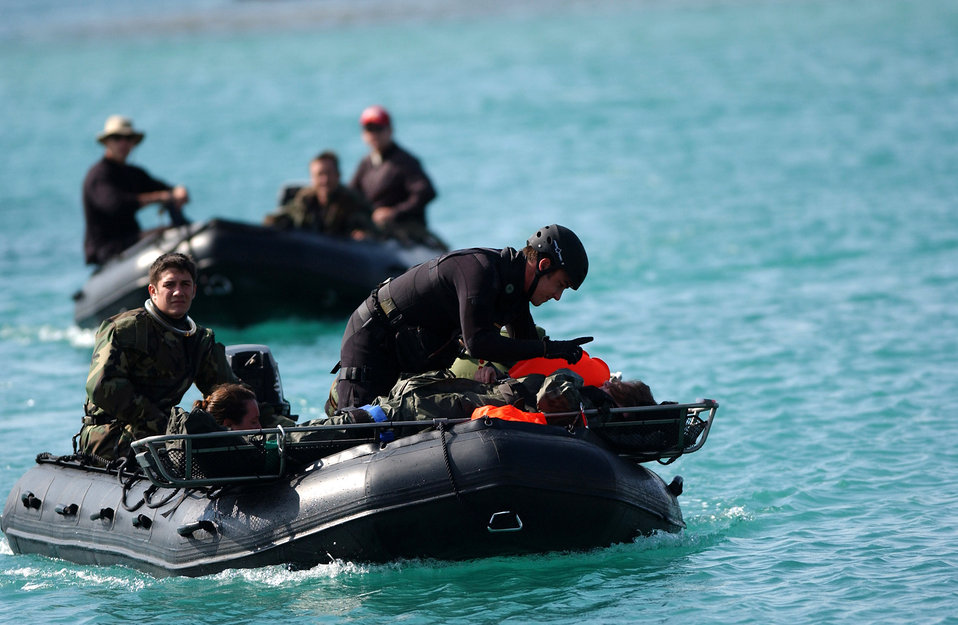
Operational readiness exercise tests Airmen, Marines

Pararescuemen from the 31st Rescue Squadron head to shore with injured victims during a simulated water rescue during a joint operational readiness exercise Dec. 5 at Kadena Air Base, Japan. These scenarios enable pararescuemen to enhance their proficiency in water-based rescues and life-saving skills.